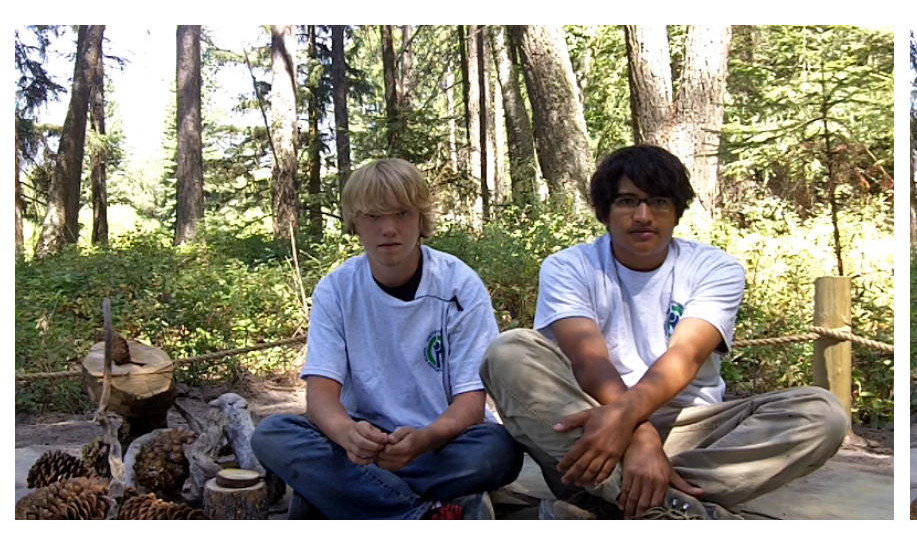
Creston National Fish Hatchery Outdoor Classroom Project

Montana Tribal Youth Conservation Corps
Nature Explore Outdoor Classroom Project

Nick Adamson and Chris Camel in the Nature Art Area.

Evie Bradley/USFWS